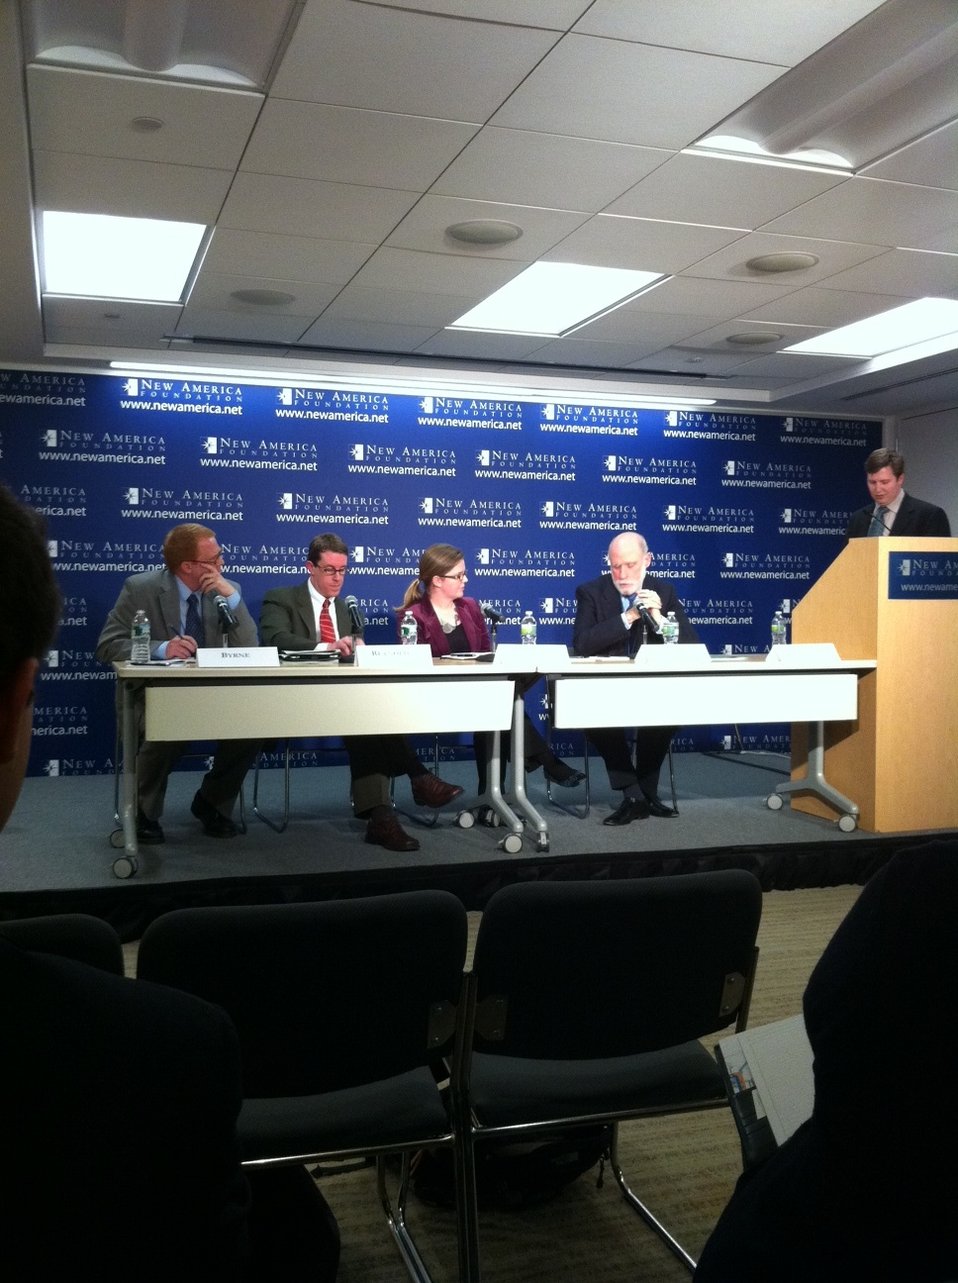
More Than a Broadband Map

GIS expert Mike Byrne joins Vint Cerf and others at the More Than a Broadband Map event at the New America Foundation. March 23, 2011